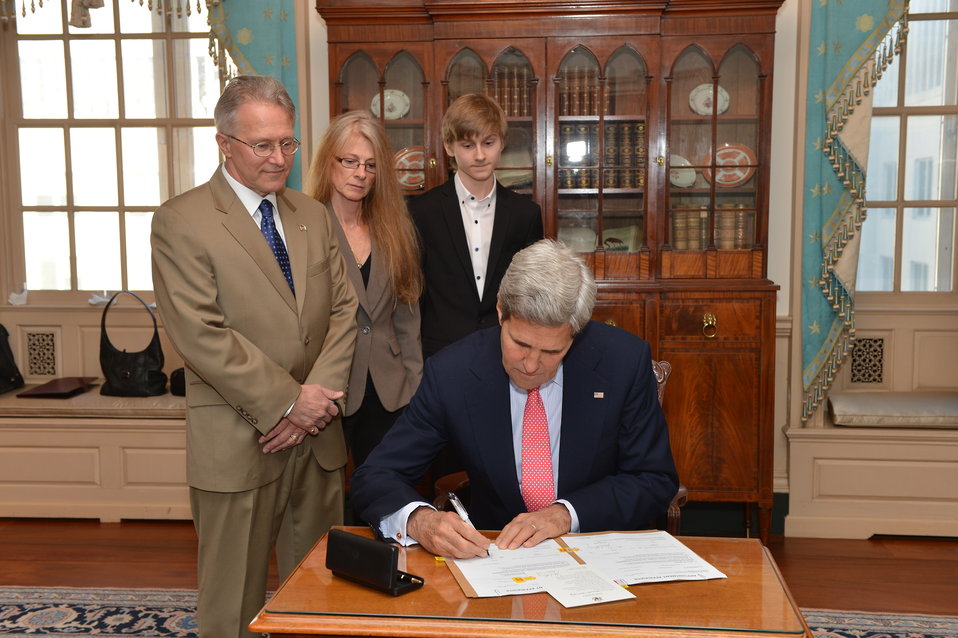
Secretary Kerry Hosts a Swearing-In Ceremony for Ambassador McCulley

U.S. Secretary of State John Kerry hosts a swearing-in ceremony for Terry McCulley as U.S. Ambassador to Cote d’Ivoire at the U.S. Department of State in Washington, D.C., on October 18, 2013.